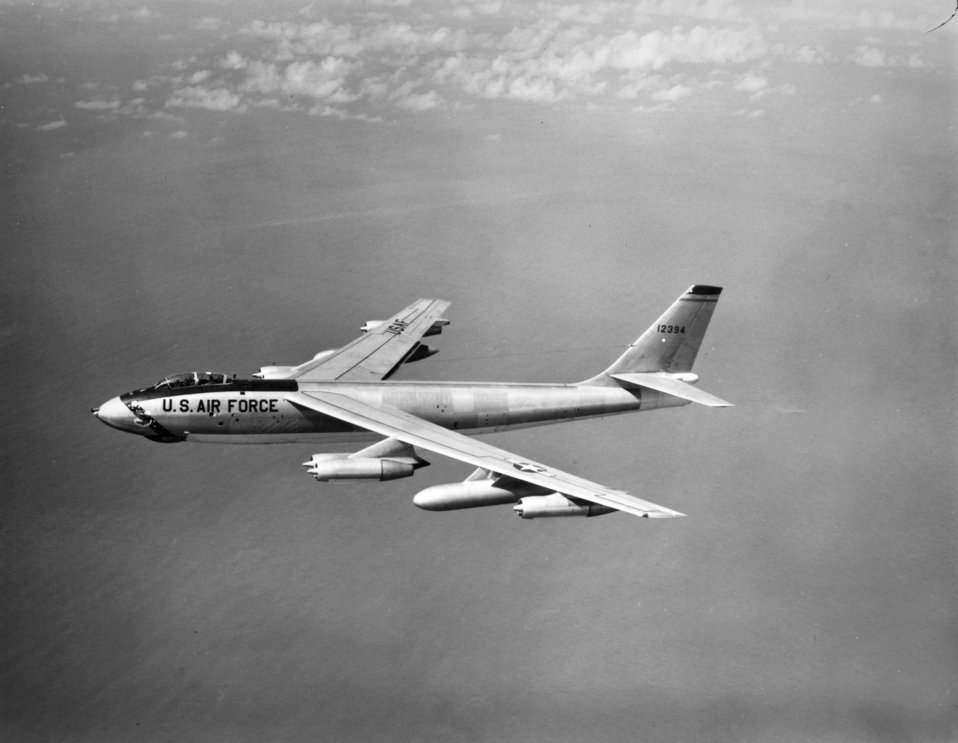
Boeing B-47 Stratojet

1950's -- An overall view of a Boeing B-47 Stratojet aircraft in flight. The world's first swept-wing bomber. 7 April 1956